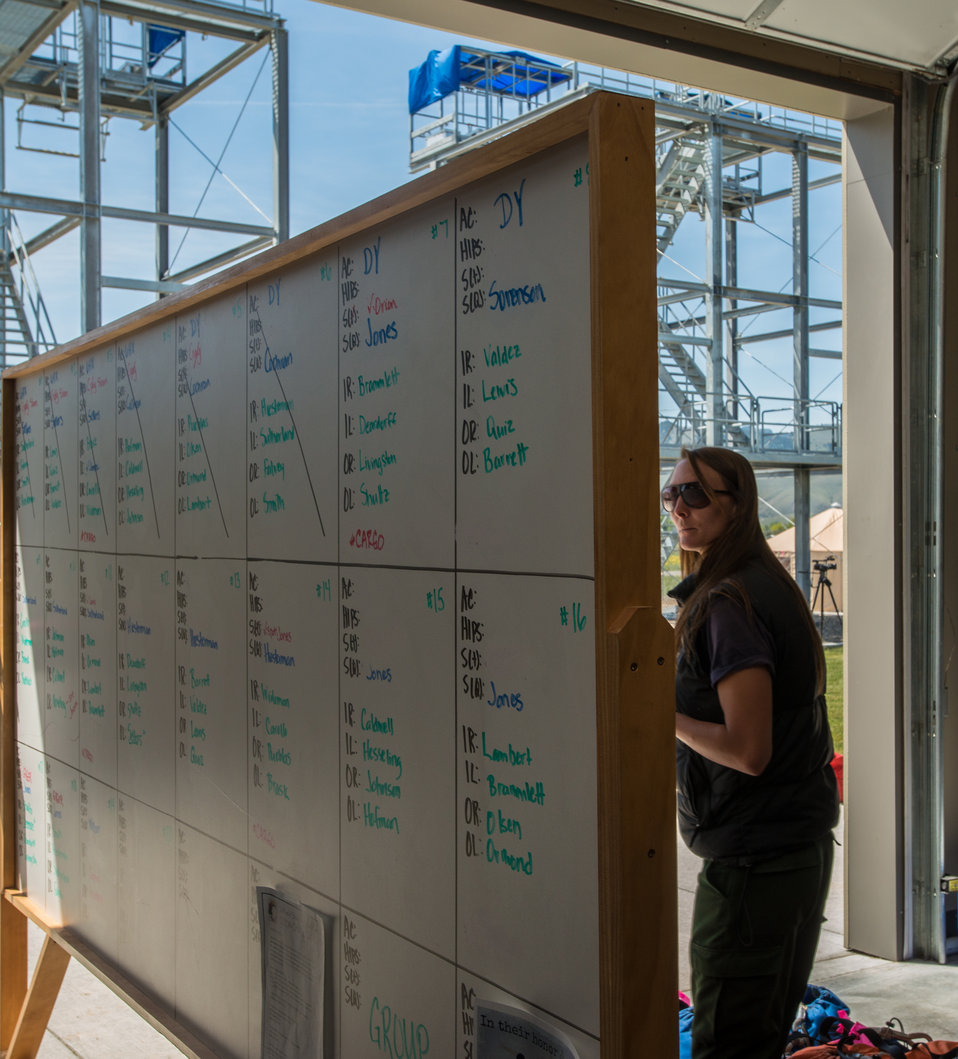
Chief Manifest Specialist Jessica Martin is in charge of ensuring the right veteran wildland firefighter rappeller is assigned with the helicopters, spotters and evaluators that they need to train and become recertified at the U.S. Department of Agriculture (USDA) U.S. Forest Service (USFS) National Helicopter Rappel Program’s Rappel Academy at Salmon Air Base in Salmon, ID on Wednesday, May 14, 2014. From May 12, 2014, 72 veteran rappellers from all over the nation, 30 support staff, and three helicopters with flight crews attend the training at Salmon Air Base. Participants will rappel into the Perreau Creek area. The annual training is delivered in accordance with the National Rappel Operations Guide; strengthen leadership, teamwork, and communications within the rappel community, and produces quality aerial delivered firefighters for use in fire and aviation operations. The USDA Forest Service National Helicopter Rappel Program’s primary mission is initial attack. Rappel crews may be utilized for large fire support, all hazard incident operations, and resource management objectives.